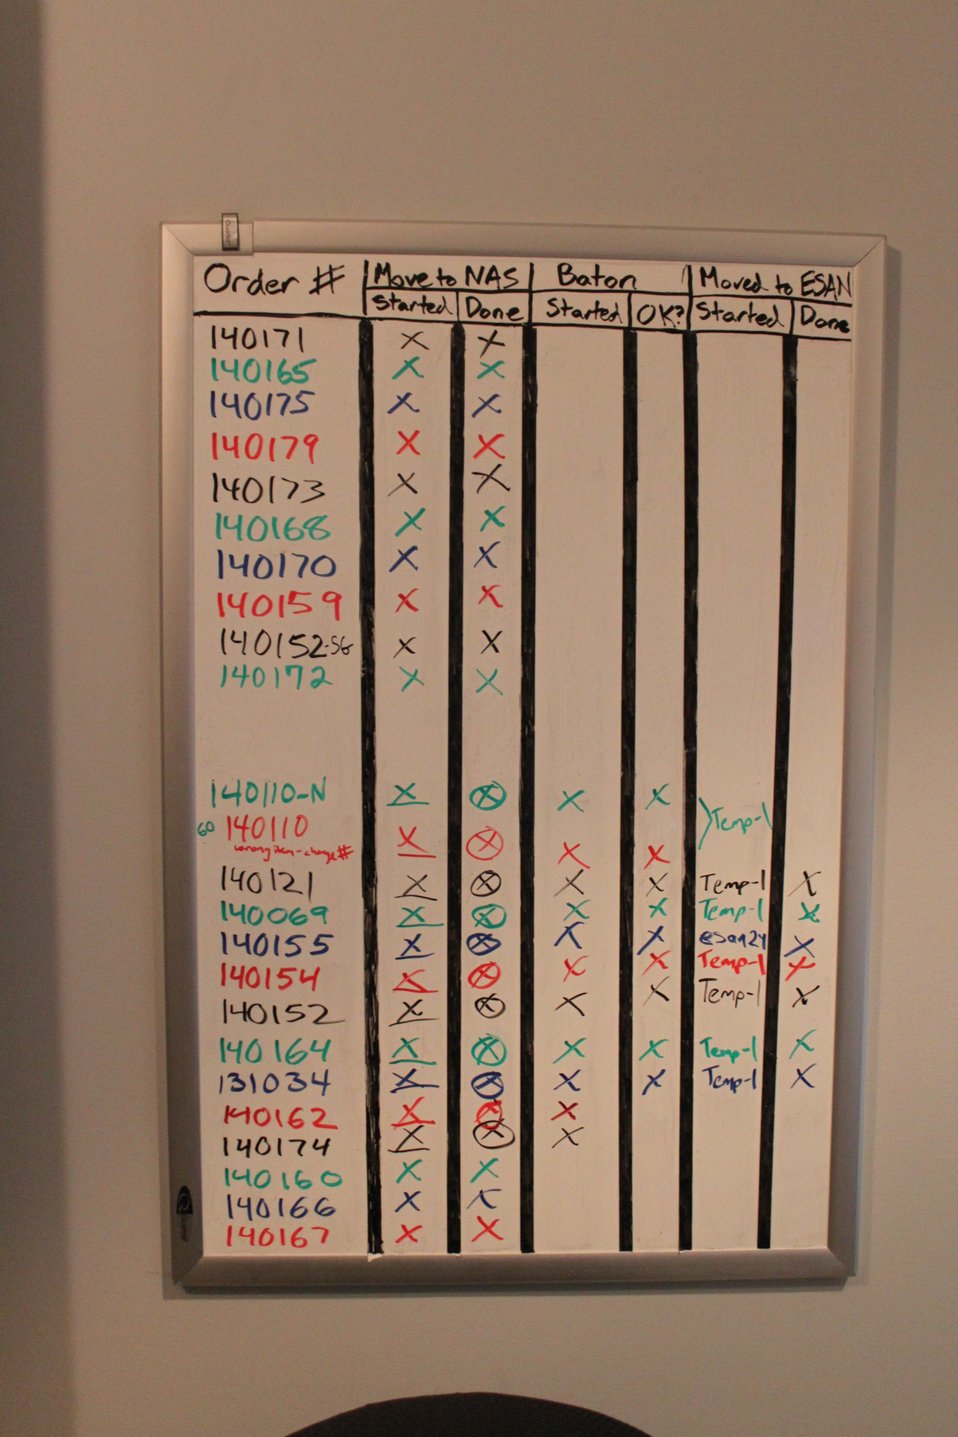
In lieu of an actual digital asset management system, the motion picture preservation lab uses a white board to track jobs through a number of necessary steps, from transfer to local storage, quality control, and transfer to medium-term storage.; Location: Archives 2 - Motion Picture Preservation Lab, College Park, MD